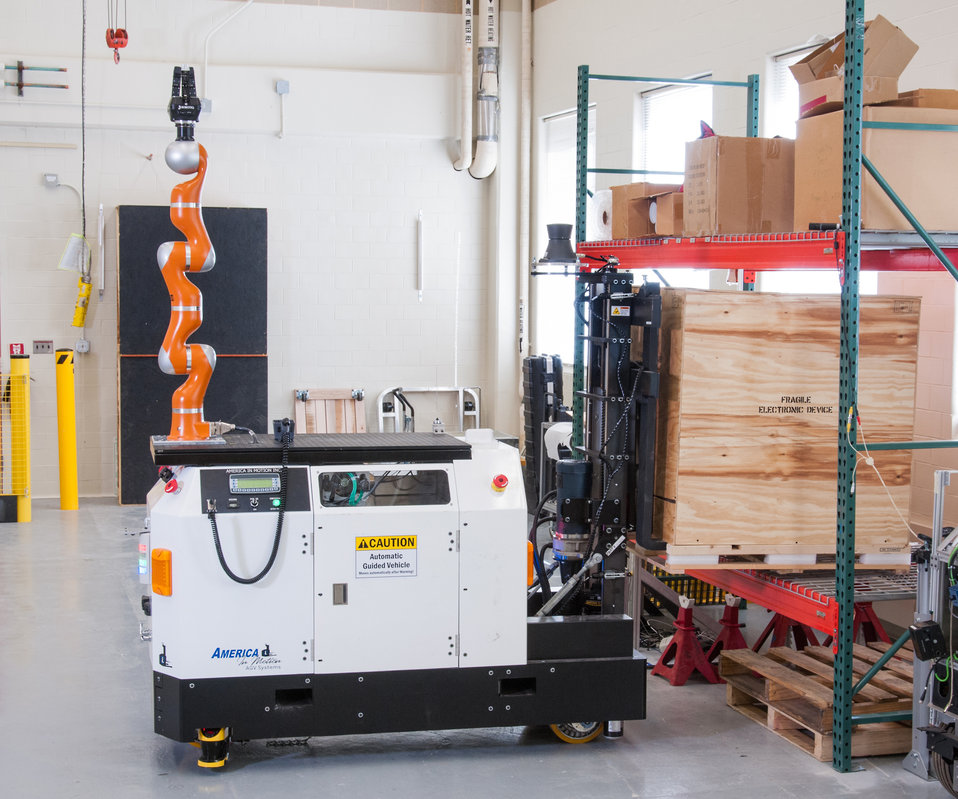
AGV

Operating autonomously, the NIST AGV is removes a crate from an industrial rack. AGV is used in the development of safety and performance metrics and test methods for the manufacturing applications.